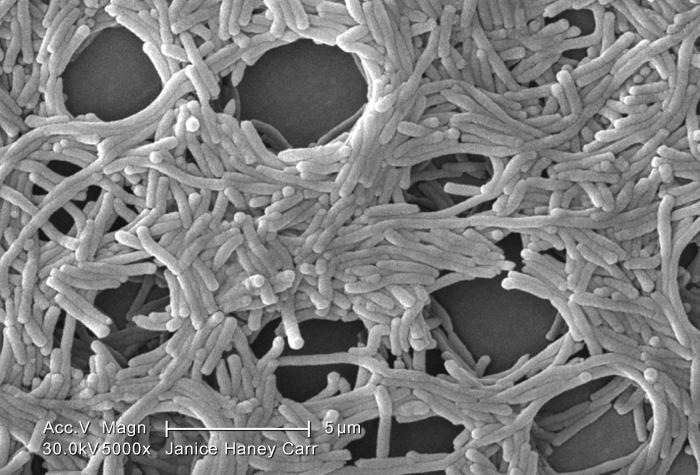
Under a moderately-high magnification of 5000X, this scanning electron micrograph (SEM) depicted a large grouping of Gram-negative Legionella pneumophila bacteria. Please see PHIL 11092 through 11152 for additional SEMs of these organisms, specifically PHIL 11148 for a colorized version of this image. Of particular importance, is the presence of polar flagella, and pili, or long streamers, which due to their fragile nature, in some of these views seem to be dissociated from any of the bacteria.